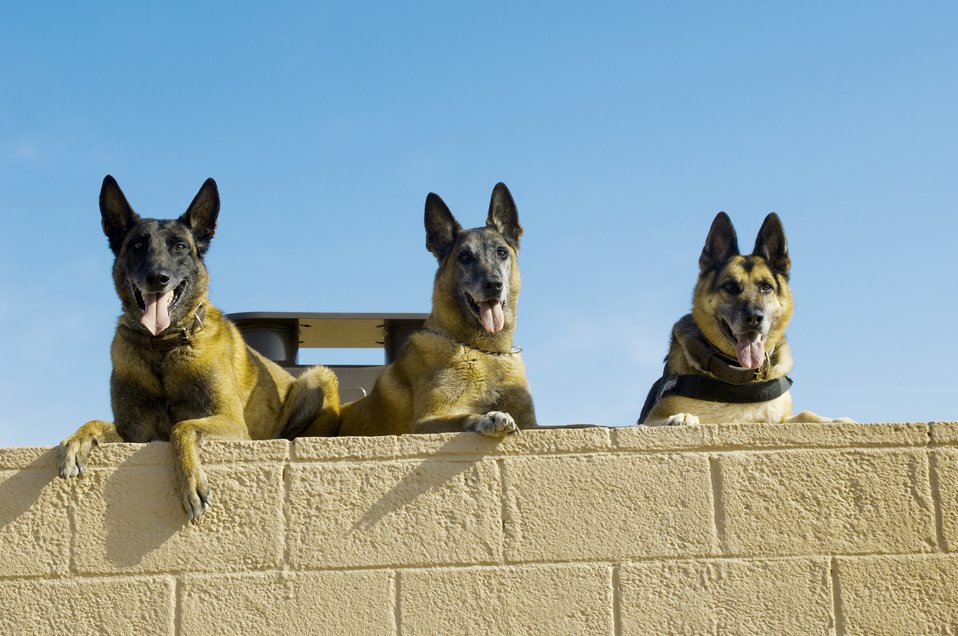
What's up?

Roc, Kisma and Jampy take a rest at the military working dog kennels at Luke Air Force Base, Ariz., March 25, 2010. They are military working dogs assigned to the 56th Security Forces Squadron at Luke.